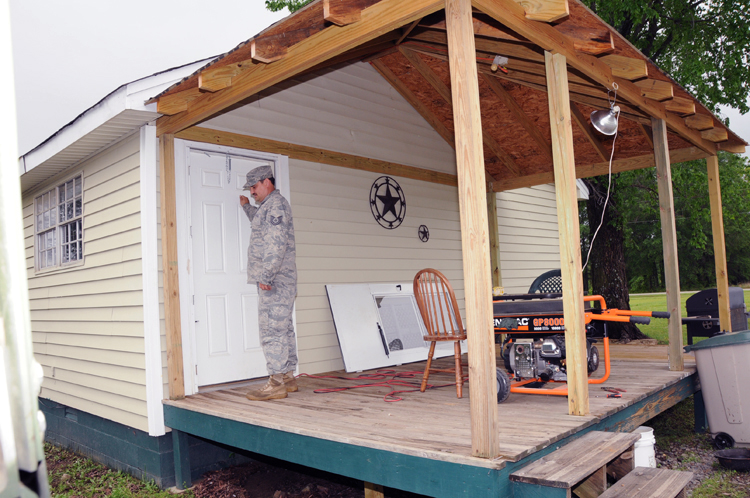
Guardsmen respond to Arkansas tornado damage

Tech. Sgt. Kevin Burrow knocks on a resident's door April 26, 2011, in Vilonia, Ark., during patrols after the community sustained damage to homes, power lines and businesses. Sergeant Burrows is a member of the 189th Airlift Wing's Rapid Augmentation Team Charlie patrol that checks on residents after severe weather damage.